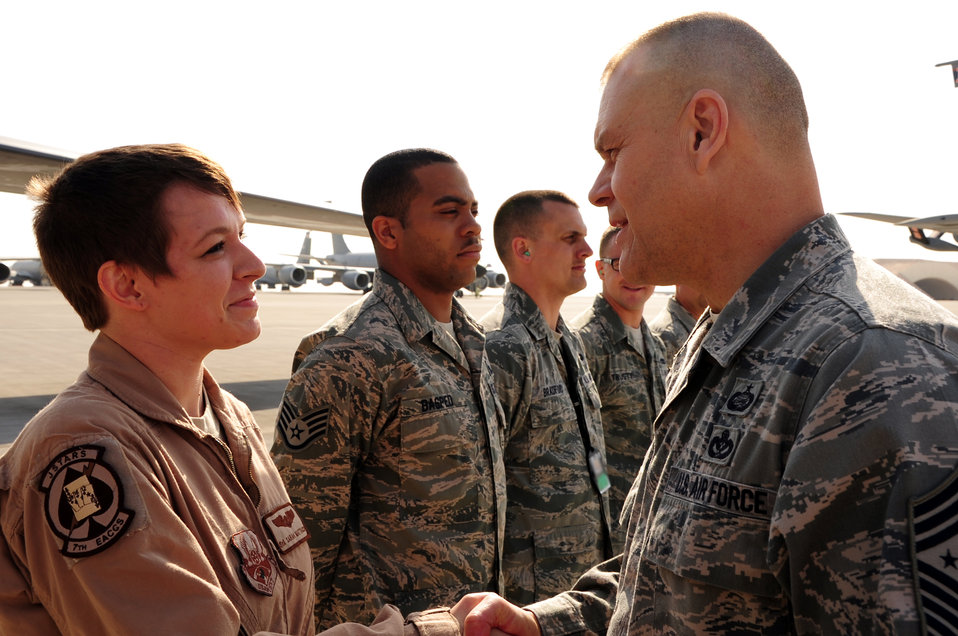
CMSAF talks resilience

Chief Master Sgt. of the Air Force James Roy (right) presents Senior Airman Sarah Mattausch, a 7th Expeditionary Air Command and Control Squadron airborne mission system specialist, with a coin during a base visit in Southwest Asia on Jan. 31, 2012. Mattausch, who is deployed from Robins Air Force Base, Ga., was recognized for applying key suicide prevention techniques that saved the life of a fellow Airman. During his trip, Roy held an enlisted all-call and visited several units to discuss quality of life issues, resiliency programs and the future of the Air Force.